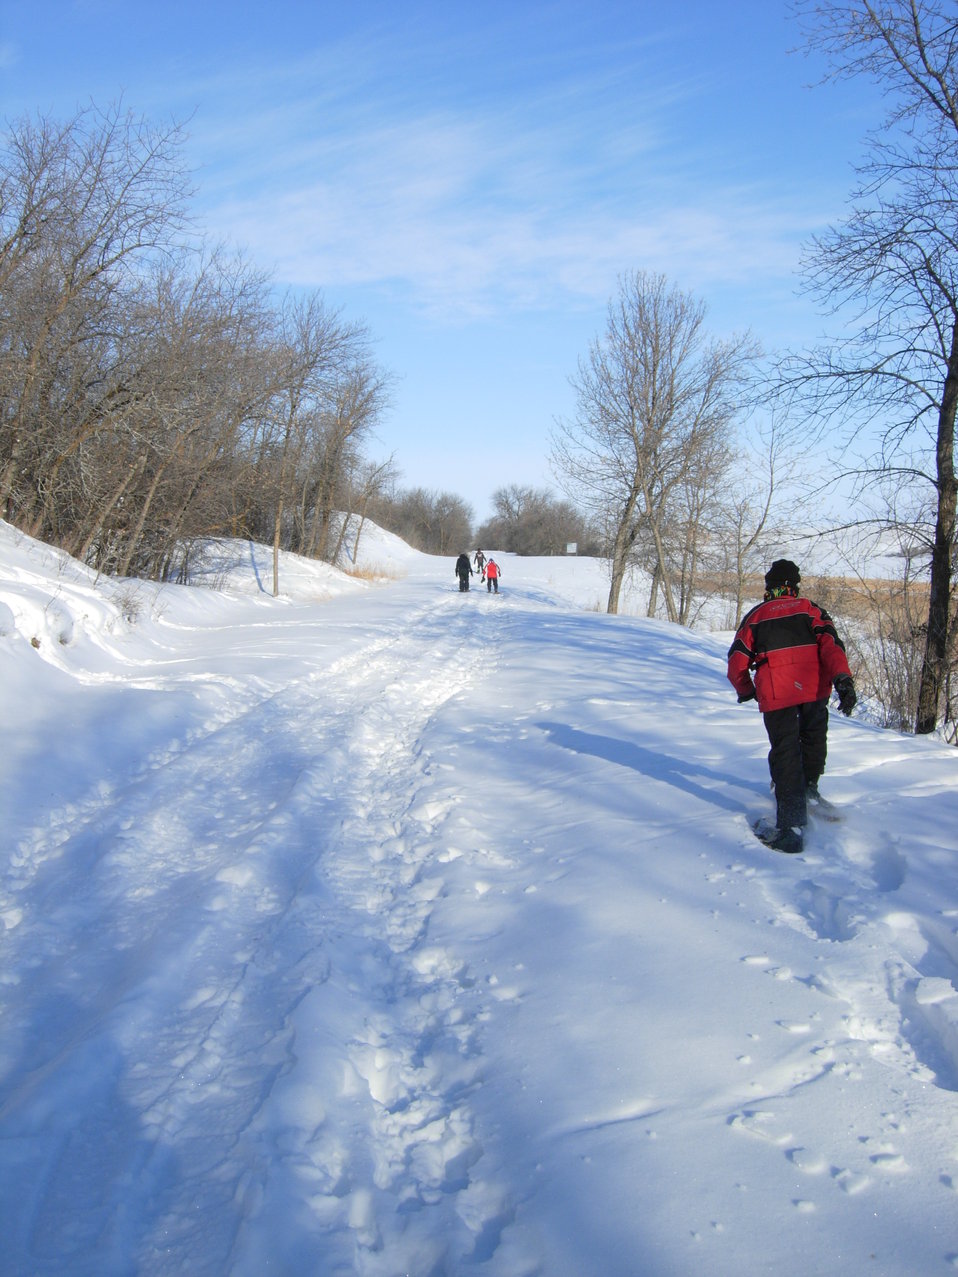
Des Lacs National Wildlife Refuge

The 'Boatdock' trail, pictured above, was one of the three trails utilized by 52 participants during the snowshoeing program on January 29th at Des Lacs NWR.